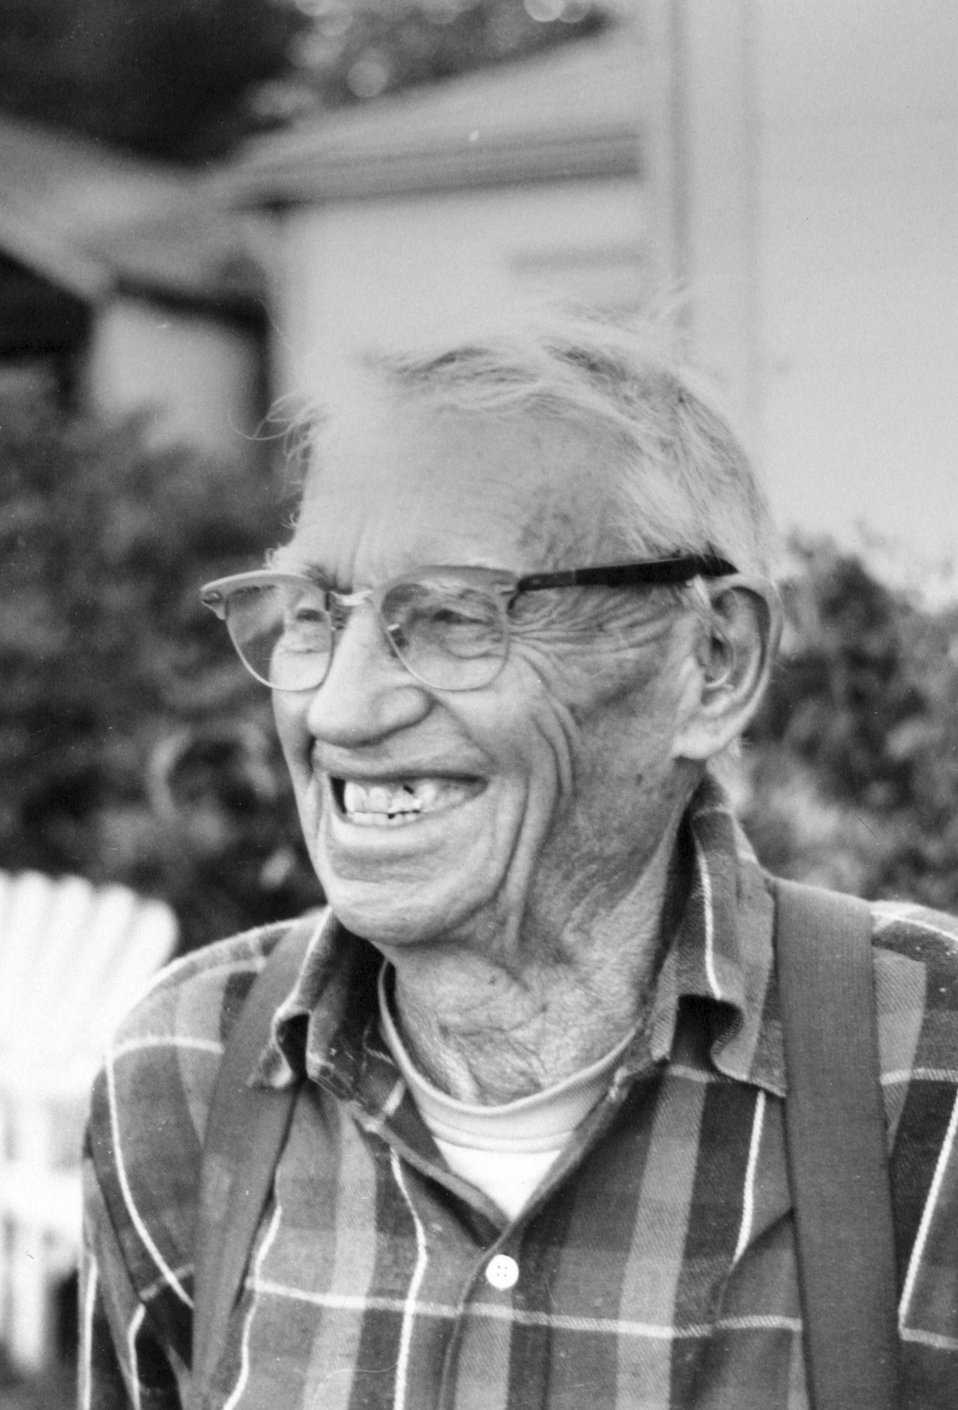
Leo Frye